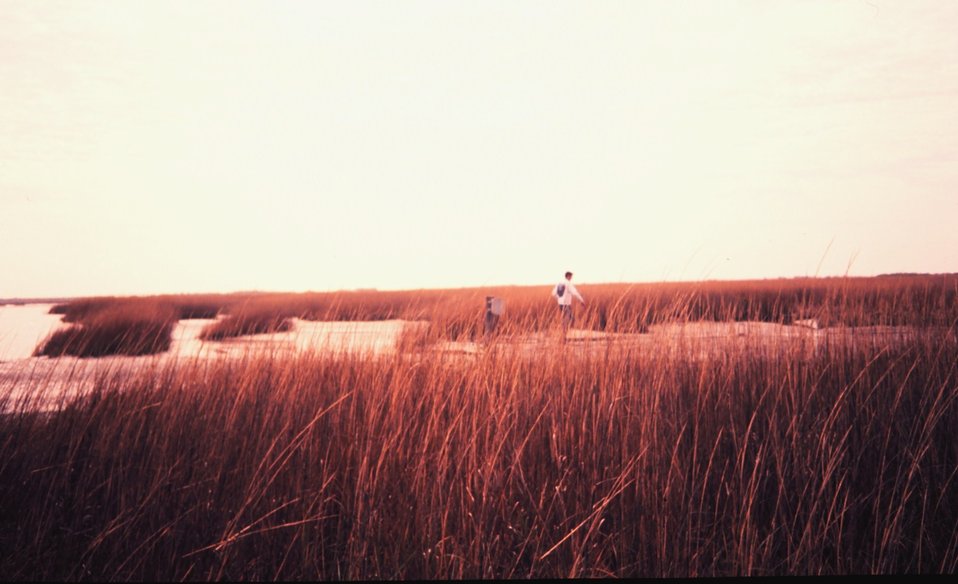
Natural marsh area adjacent to dredged material deposition area - Open area will be colonized by plants and become productive habitat.